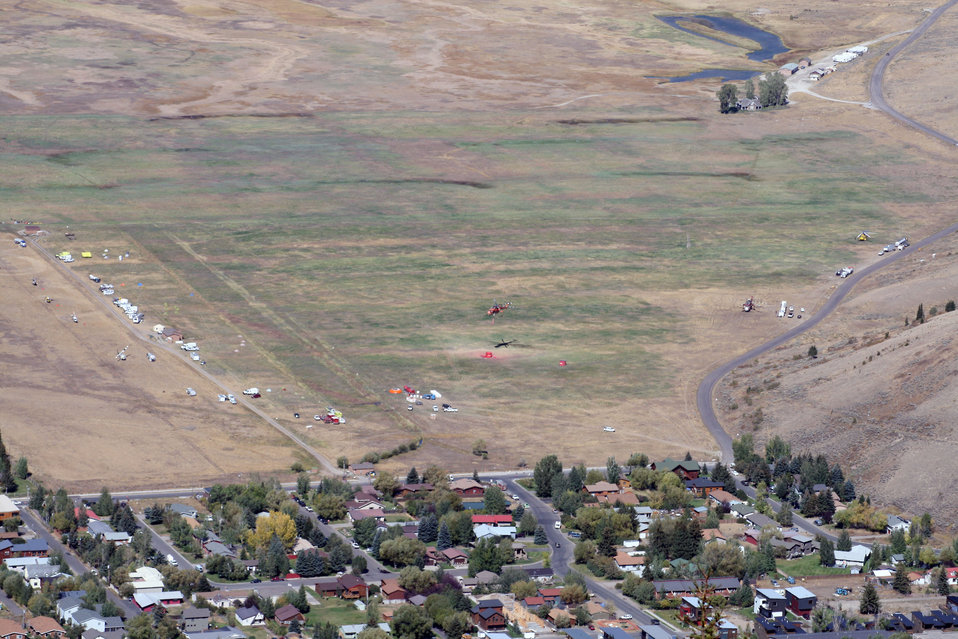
Aerial Photo of the Helibase Area

The refuge's southeastern corner, which borders East Jackson, became a hub of activity during the Horsethief Canyon Fire. The refuge's irrigation system was used to provide a water source for aerial suppression operations.